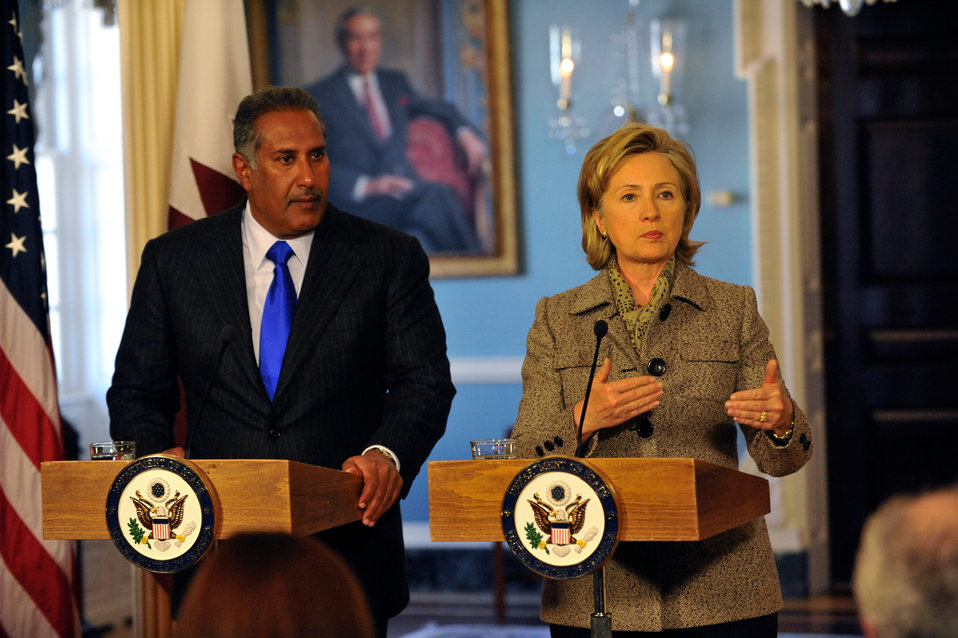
Secretary Clinton Meets With Qatar Foreign Minister

U.S. Secretary of State Hillary Rodham Clinton meets with Qatar Foreign Minister Sheikh Hamad Bin Jassim Bin Jabr Al-Thani at the U.S. Department of State in Washington, DC January 4, 2010.